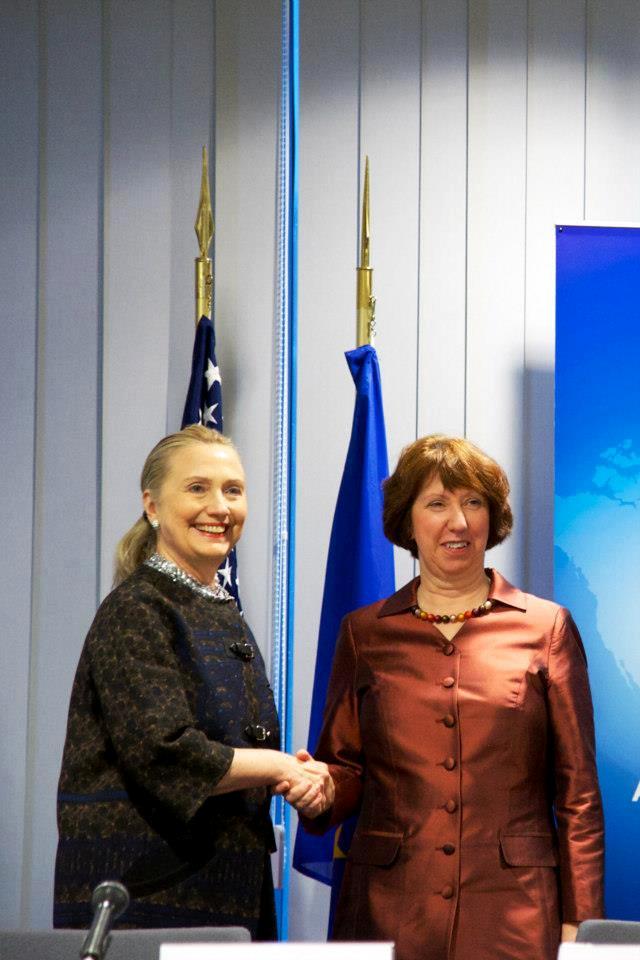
Secretary Clinton Shakes Hands With EU High Representative Ashton

U.S. Secretary of State Hillary Rodham Clinton shakes hands with EU High Representative Catherine Ashton after the U.S.-EU Energy Council meeting in Brussels, Belgium, December 5, 2012.